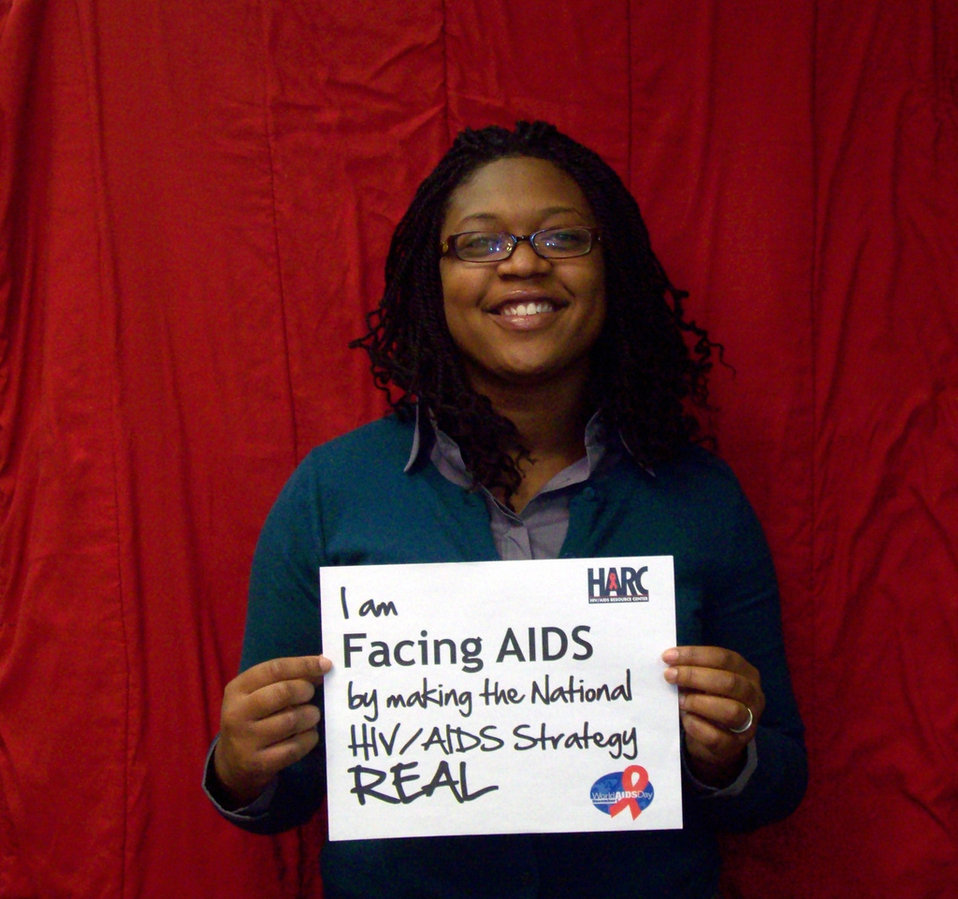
I am Facing AIDS through NHAS-32